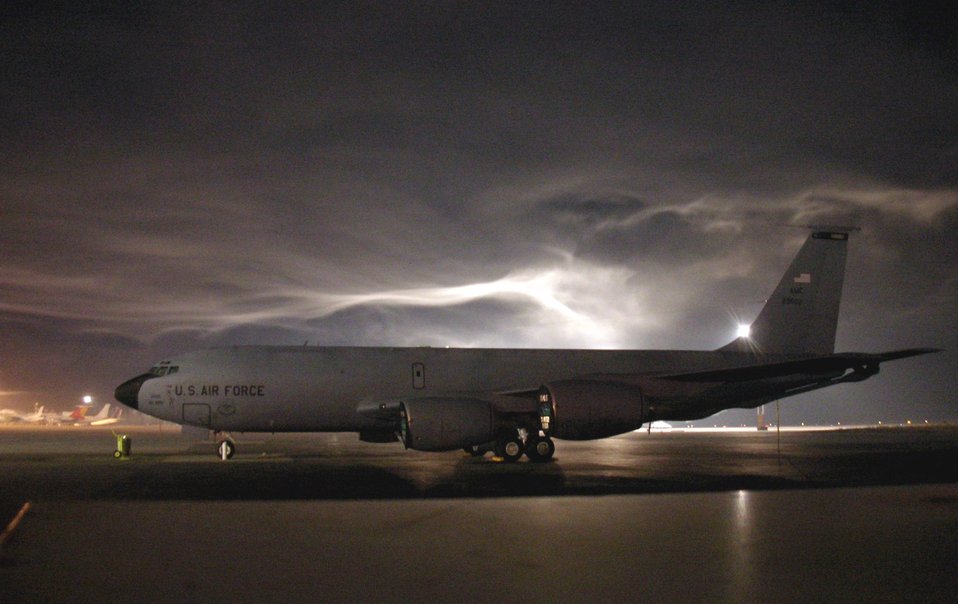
New tanker needed

A KC-135 Stratotanker sits on the flightline at Manas Air Base, Kyrgyzstan, awaiting ground crews to de-ice the tanker before it takes off on a refueling mission. The new KC-45A will replace the aging fleet of KC-135s.